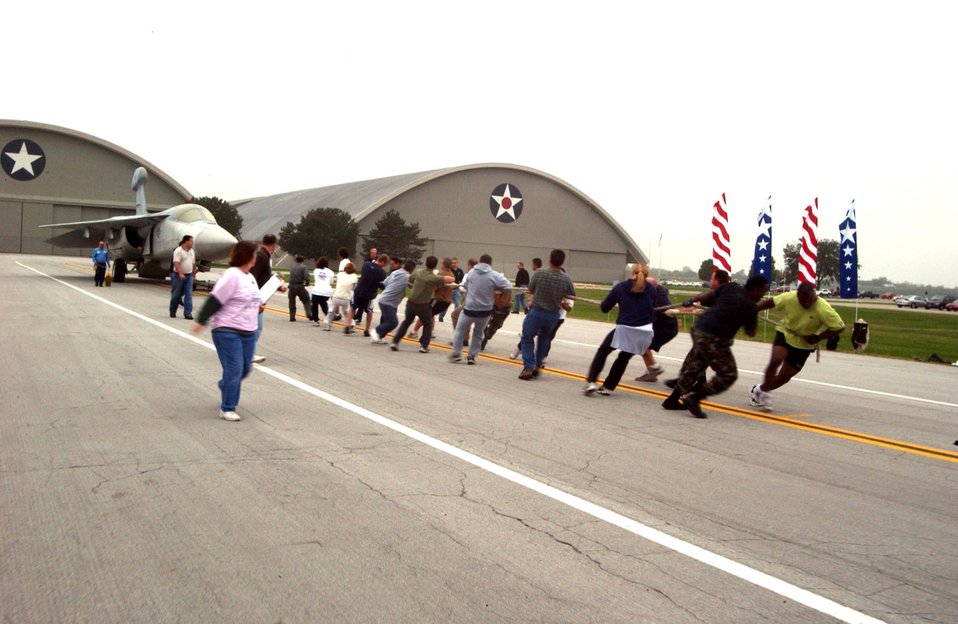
CFC Aircraft Pull

DAYTON, Ohio -- Aircraft pull participants strain against an EF-111A Raven aircraft during the seventh annual Combined Federal Campaign Aircraft Pull at the National Museum of the United States Air Force here.